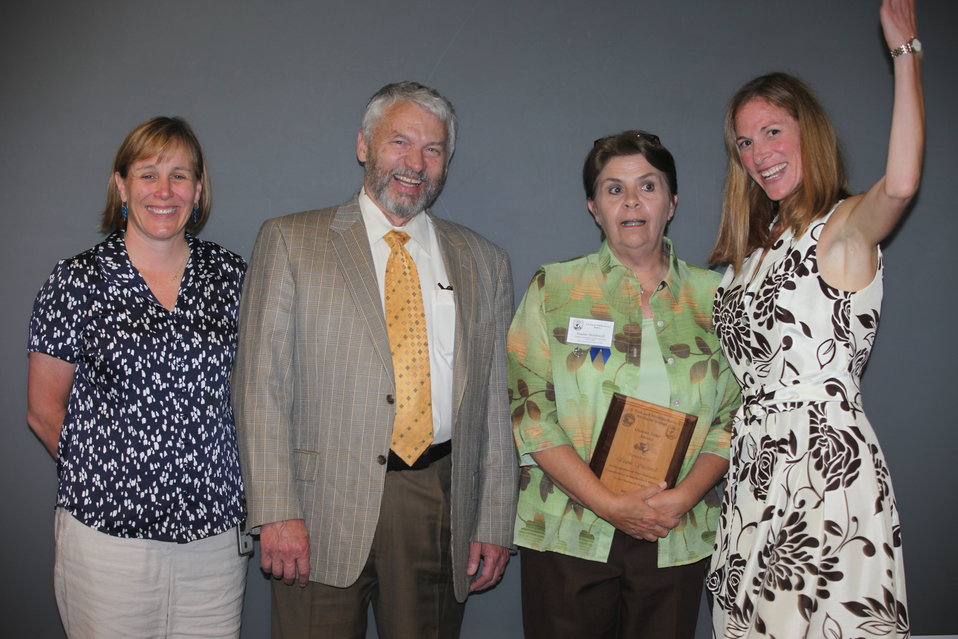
Elaine Stockwell, Fisheries, recieved the Region 5 Unsung Hero Award.
From left to right: Deputy Regional Director Deb Rocque, Deputy Director Rowan Gould, Elaine Stockwell, and Regional Director Wendi Weber